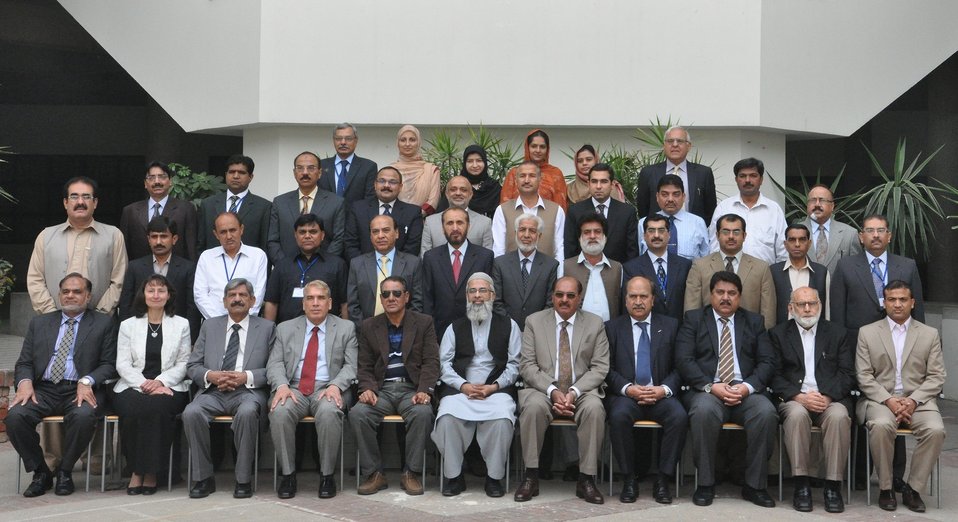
Human Resource Workshop at Lahore University of Management Sciences (LUMS)

Monday, March 19-20, 2012: Chief Executive Officers (CEOs) and HR Directors of all DISCOs along with representatives of the USAID Power Distribution Program and Trainers of LUMS.